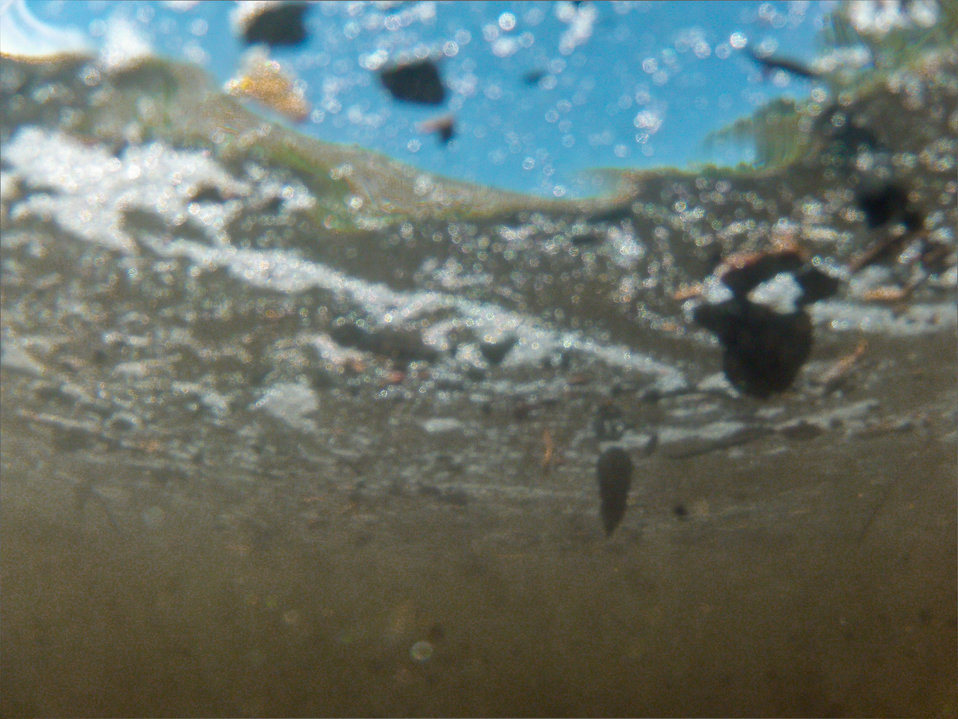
Underwater view of what would normally be clear mountain waters at a confluence of two tributaries, the Cache la Poudre and the North Fork of the Cache la Poudre, near Seaman Reservoir, 60 miles north of Denver, Colorado on Friday, July 20, 2012. Because of the Hewlett Gulch Fire (May 14, 2012), in the Poudre Canyon area clear water has been transformed to nearly black water, heavily laden with ash, silt, and burnt debris washed down mountainsides by thunderstorms. At its peak more than 400 firefighters were battling fires pushed by 50 mph winds. When the last embers were cooled, more than 12-square miles lay blacked at a cost of approximately 3.2 million dollars. The aerial distribution of straw has successfully kept nearby Seaman Reservoir clean for the drinking water of the City of Greeley. Forest Service lands receive straw, while private and other lands receive a seed mix and straw to promote ground cover plant growth on ash-covered lands. In total, 1,800 tons of straw will be applied during the 14-day operation. One quarter of the cost was paid by the City of Greeley and the U.S. Department of Agriculture funded the remainder.